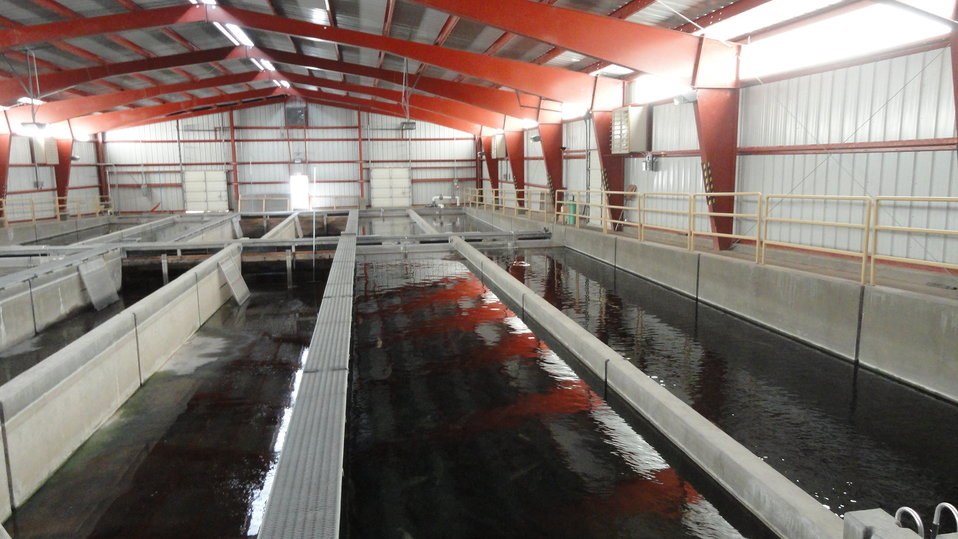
Visiting Saratoga National Fish Hatchery

In April of 2014, regional office employees visited Saratoga National Fish Hatchery to learn more about its efforts towards recovering the Wyoming toad (Bufo baxteri).

The hatchery adopted a unique role in becoming the first unit in the National Fish Hatchery System to become involved in rearing endangered amphibians. The Wyoming toad was a common sight on areas of the Laramie Plains, Albany County, Wyoming, into the early 1970s but the species' populations crashed in the mid-1970s. The Wyoming toad was listed as endangered by the U.S. Fish & Wildlife Service in January 1984. Found only in southwestern Wyoming, the Wyoming toad is considered the most endangered amphibian in North America. The hatchery maintains a captive population for breeding, rearing, and refugia, and the offspring from this program will be used for reintroduction efforts.